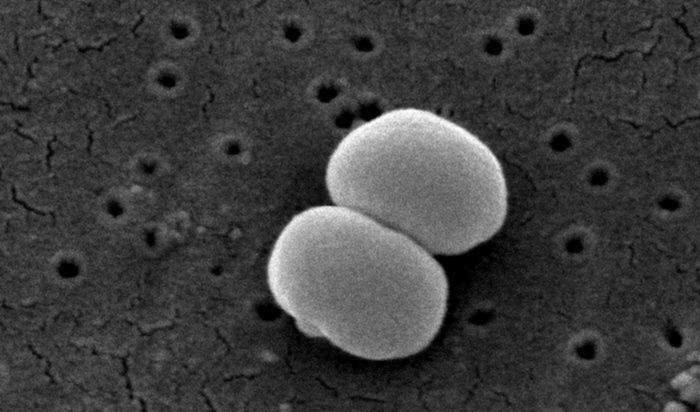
Scanning electron micrograph (SEM) of two Gram-positive Staphylococcus epidermidis bacteria. See PHIL 10041 for a colorized version of this image.